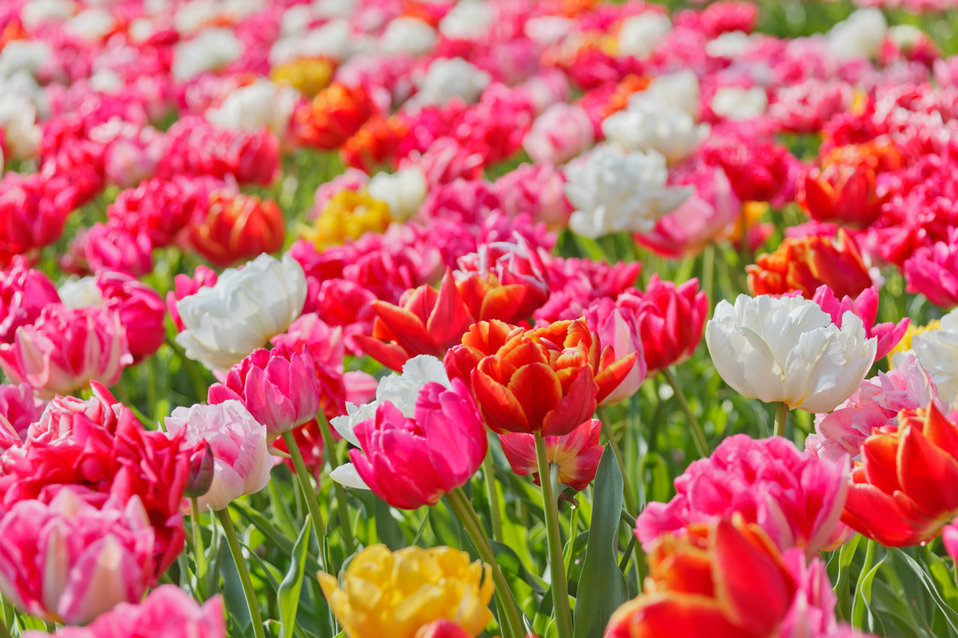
Bright vivid flowers

Bright vivid tulip flowers background.